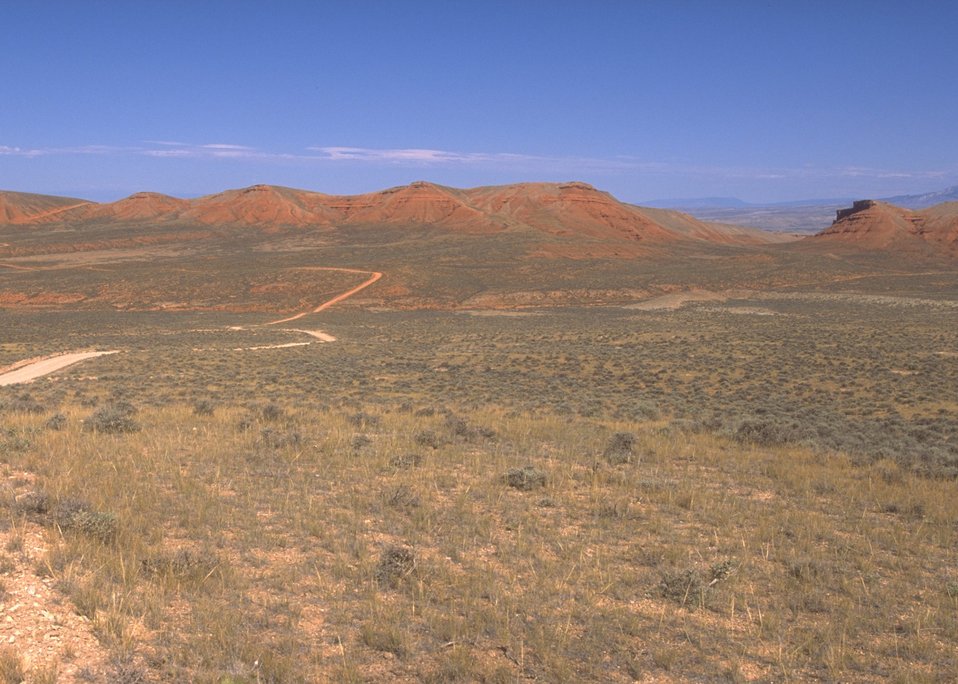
View along the Red Gulch/Alkali Back Country Byway, Worland Field Office.